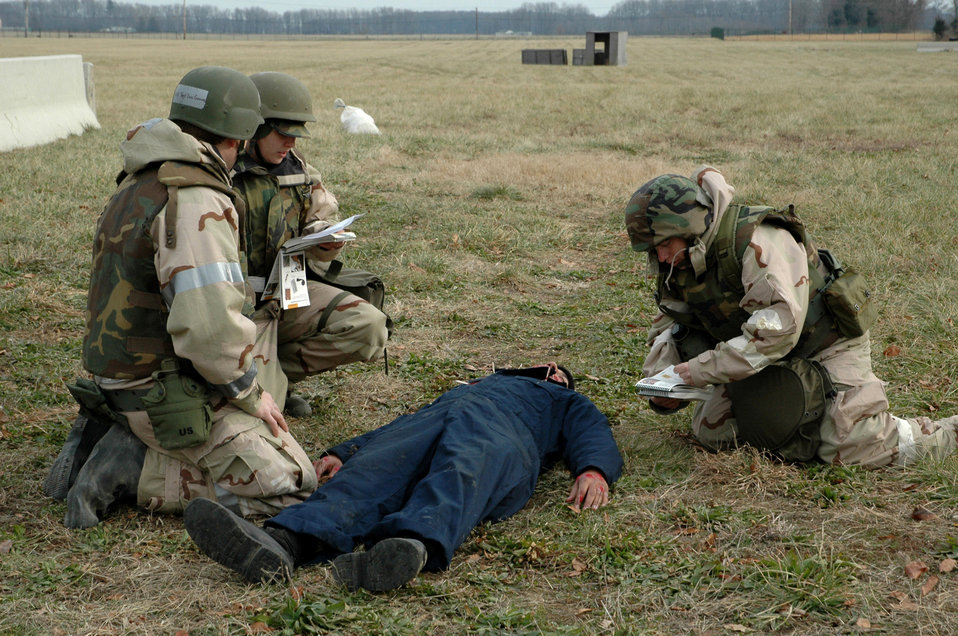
Dover exercise tests Airmen's combat environment skills

Airmen use their Airman's Manual during a sweep when they came across a simulated wounded servicemember during Exercise Haunted House Battle Ax Jan. 7 at Dover Air Force Base, Del.